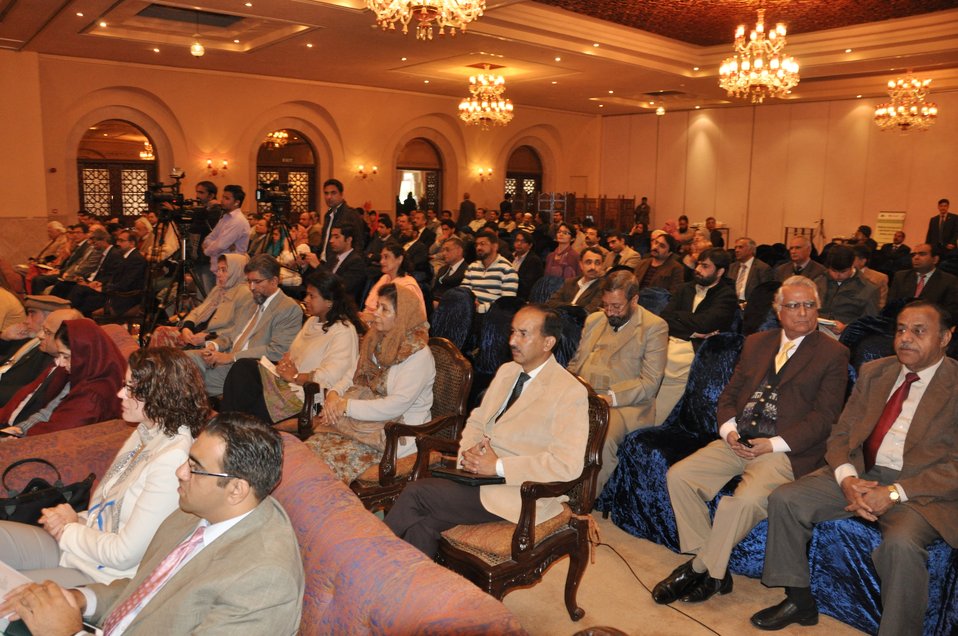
PHDS Launch